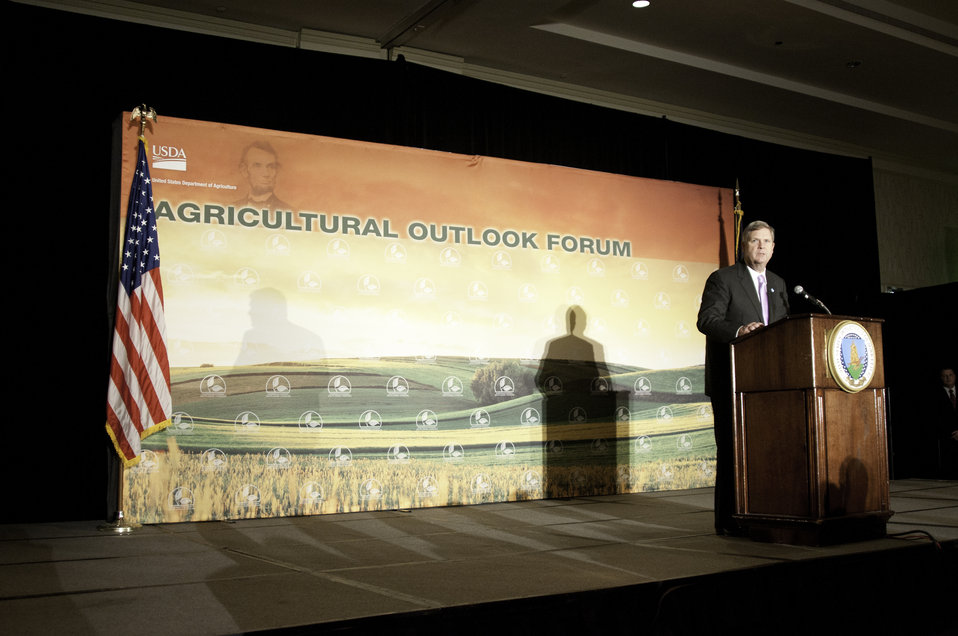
Agriculture Secretary Tom Vilsack makes remarks at the 2012 Agricultural Outlook Forum, “Moving Agriculture Forward” in Arlington, VA. On Thursday, February 23, 2012.